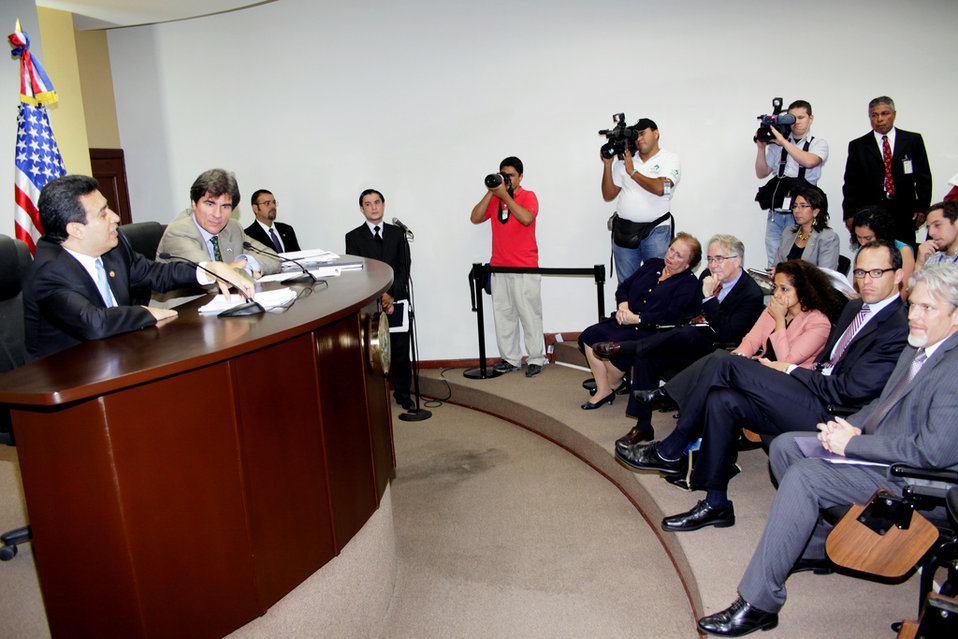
Assistant Secretary Fernandez and Salvadoran Presidential Technical Secretary Segovia Discuss the Partnership for Growth Initiative

Assistant Secretary of State for Economic, Energy and Business Affairs Jose Fernandez and Salvadoran Presidential Technical Secretary Alexander Segovia discuss the Partnership for Growth initiative during a press conference at the Presidential Palace in San Salvador, El Salvador, on November 3, 2011.